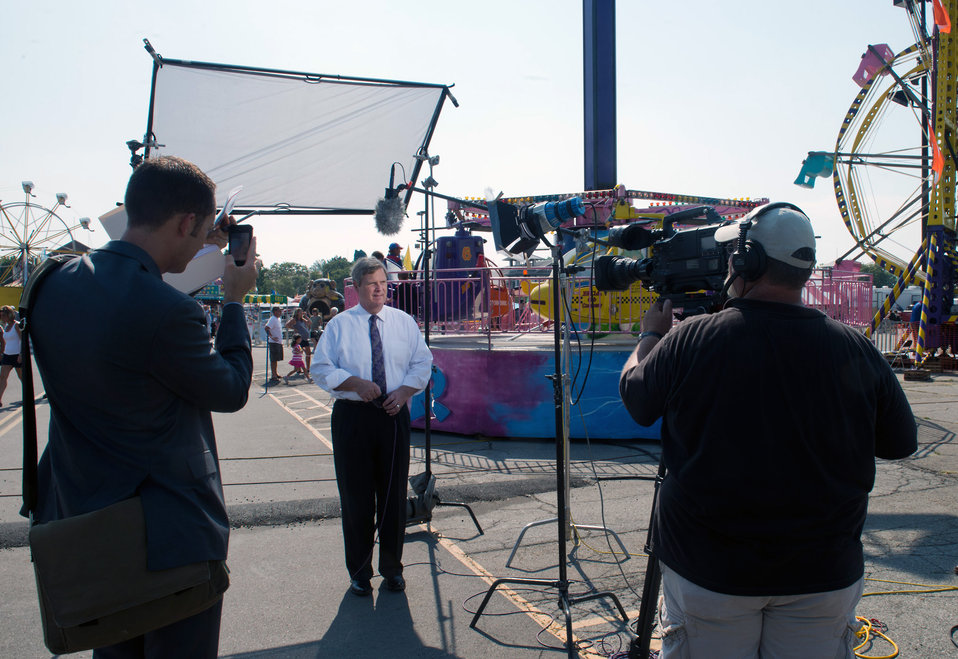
Host and Managing Editor of The Wall Street Journal Report Maria Bartiromo interviews Agriculture Secretary Tom Vilsack at the Ohio State Fair in Columbus, OH on Friday, August 3, 2012.